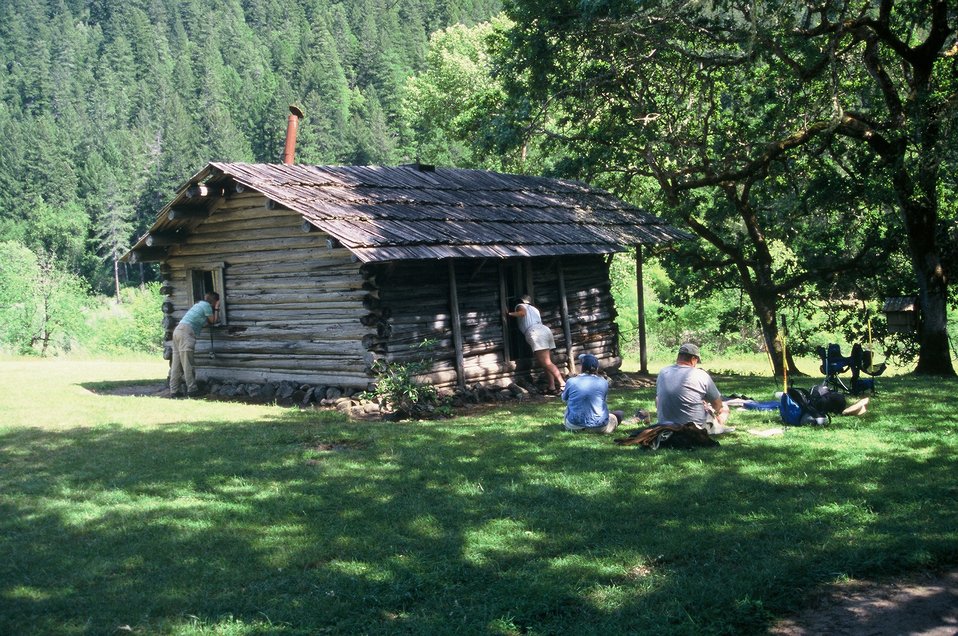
Wild section of the Rogue River from Grave Creek to Foster Bar May 19 to May 22.